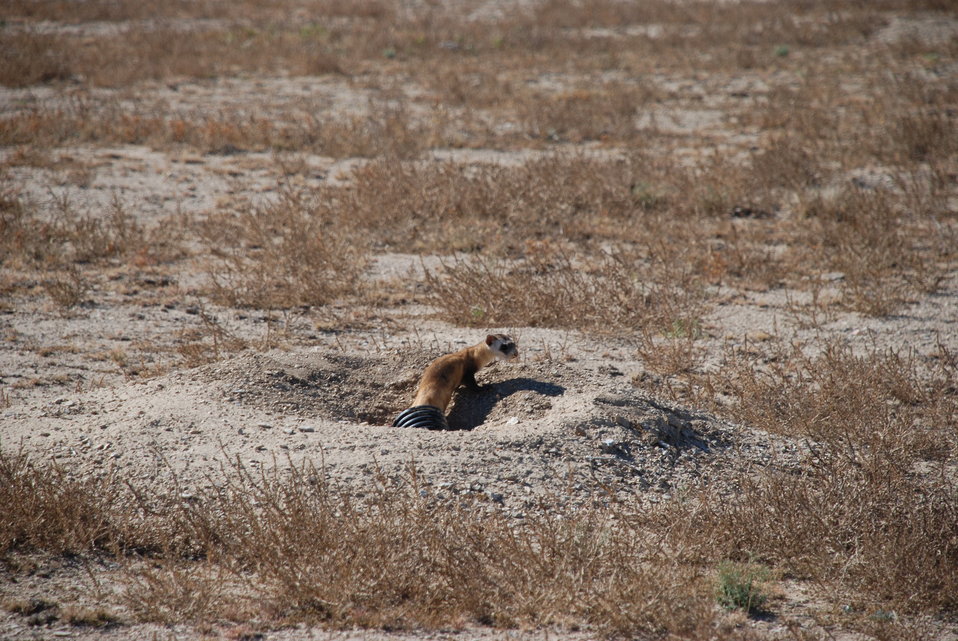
Black-footed Ferret Release

On Wednesday, October 30, 2013, thirty endangered black-footed ferrets were released onto cattle rancher Gary Walker's land, west of Pueblo, Colorado.

The release launched a potentially new way of preserving endangered species and was accomplished by way of a Safe Harbor Agreement (SHA). This SHA provides opportunities for private and Tribal landowners to volunteer their lands for reintroductions of this endangered species without affecting their land-use activities beyond mutually agreed-upon measures. It also extends these assurances to surrounding non-participating lands and other landowner interests. This SHA will be an important step in promoting the recovery of this iconic species.